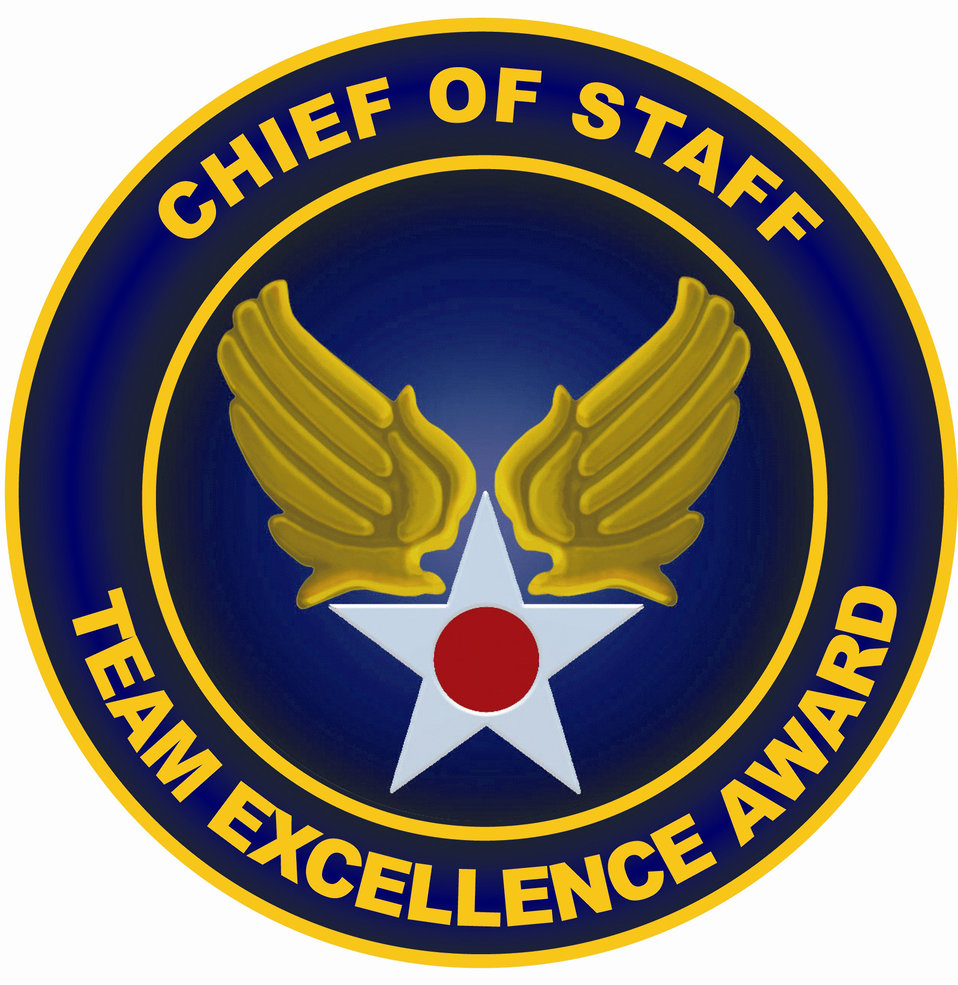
Air Force announces team-excellence awards

Five teams were selected for the 2007 Chief of Staff Team Excellence Awards during a Sept. 25 ceremony in Washington, D.C.